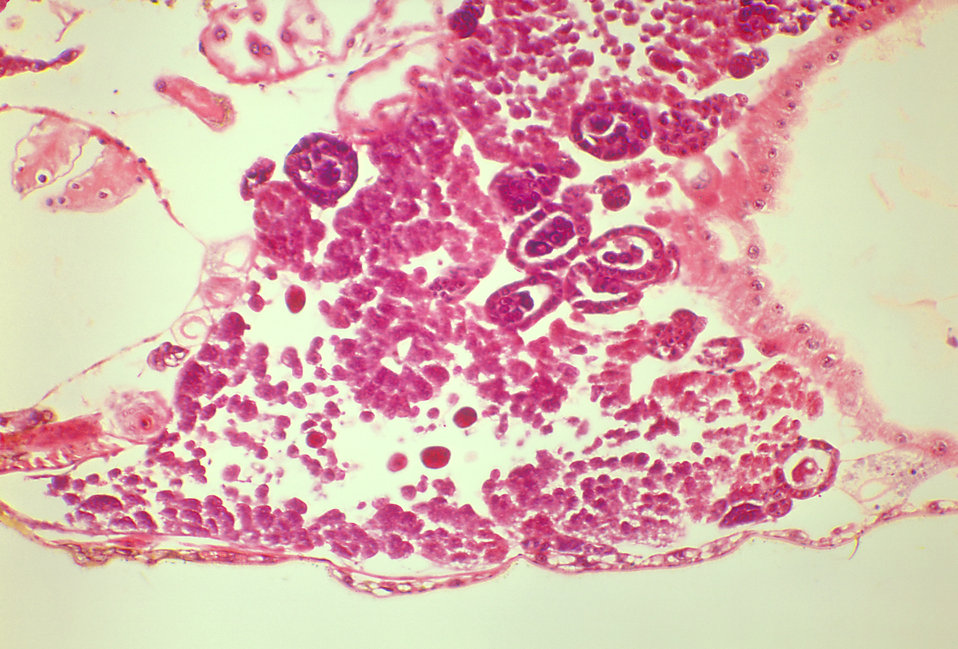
A photomicrograph revealing the histology of Onchocerca volvulus developing in a Black Fly, Simulium ochraceum.